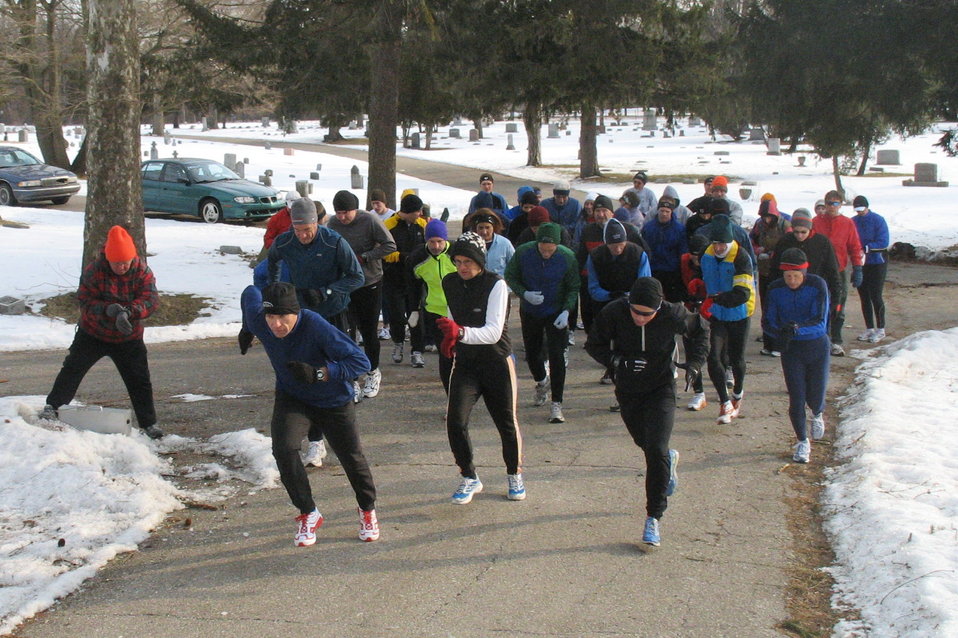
MMTC workout. 10 of 1 mile laps without rest.